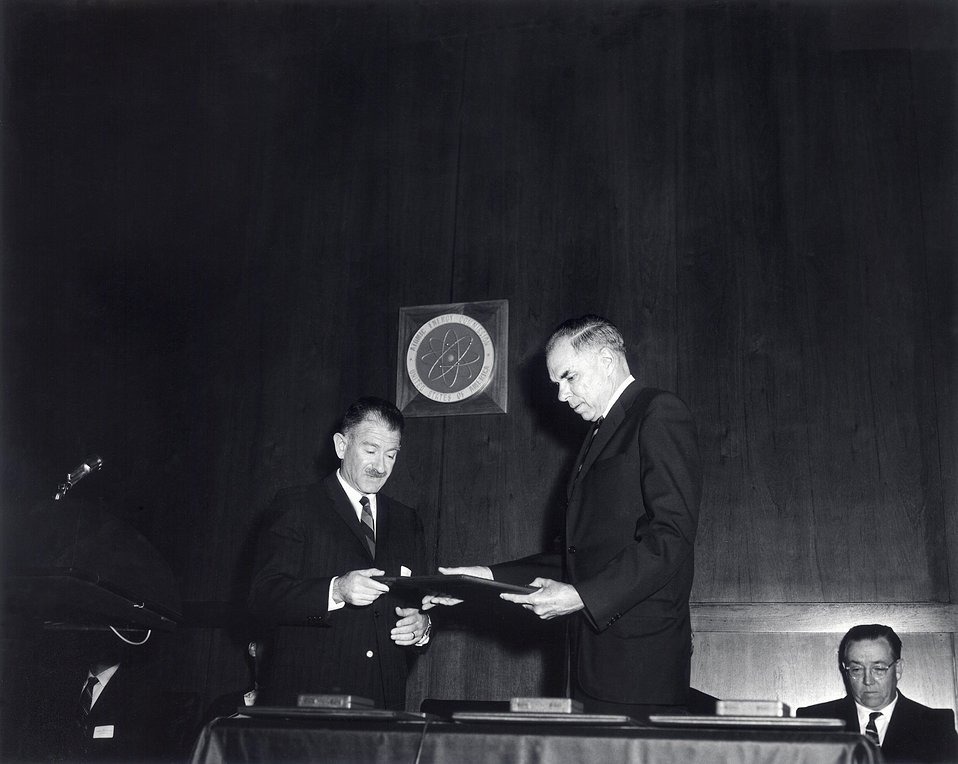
E.O. Lawrence Awards, 1967. Carnegie Institution Auditorium. L- Dr. Mortimer M. Elkind. R- Chairman Seaborg.